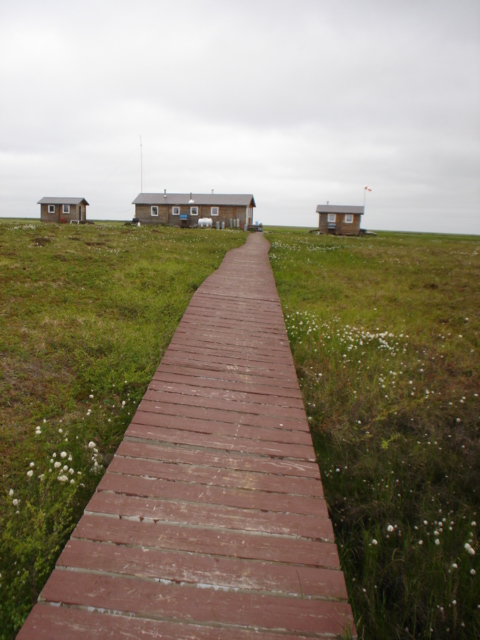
Boardwalk at Kanaryarmiut Field Station

Welcome to Kanaryarmiut Field Station. This is one of the locations that is used by refuge staff and other agengies to stage camps, house camps, etc.

USFWS Yukon Delta NWR